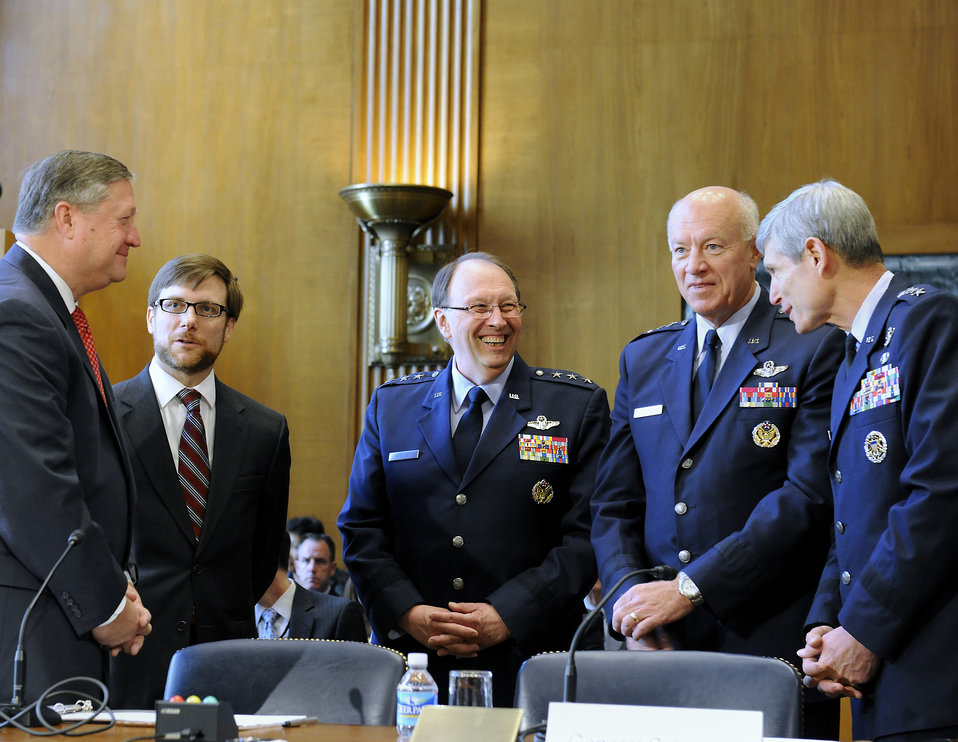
FY 13 budget testimony

U.S. Air Force senior leaders talk prior to an Air Force budget hearing before the Senate Appropriations Subcommittee on Defense on March 14, 2012, in Washington, D.C. From left are Secretary of the Air Force Michael Donley; Dr. Jamie Morin, Assistant Secretary of the Air Force for Financial Management and Comptroller; Lt. Gen. Charles Stenner, Chief of Air Force Reserve and Commander, Air Force Reserve Command; Lt. Gen. Harry Wyatt III, Director, Air National Guard; and Air Force Chief of Staff Gen. Norton Schwartz.